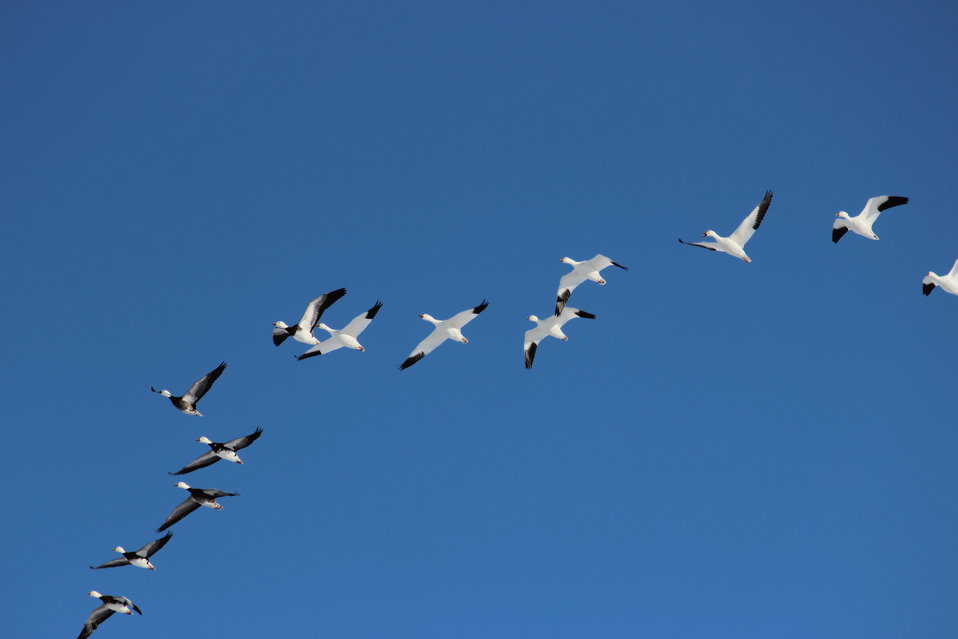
Blue and White 2

These geese are of the same species. Both are Snow geese (Chen caerulescens), but the darker ones are a color phase often referred to as the 'blue goose'.